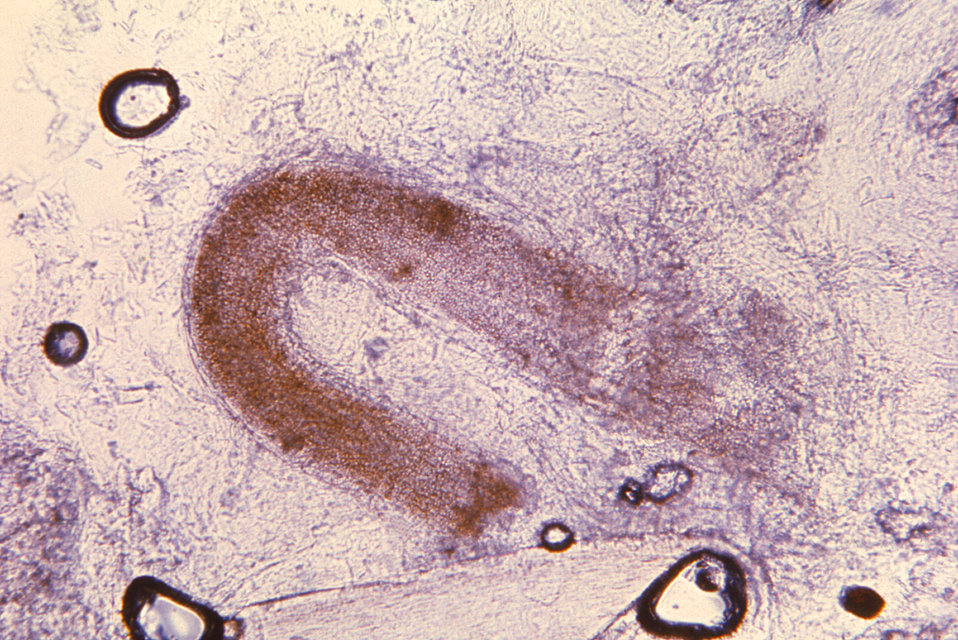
Magnified 100X, and processed in a NaOH mount, this photomicrograph depicts the histopathologic changes in the structure of a hair follicle, in a patient with ringworm, infected with the dermatophyte, Trichophyton tonsurans. The fact that this infection had invaded the internal structure of the hair shaft, makes this infection an endorthrix, rather than an exothrix, which would be confined to the hair's exterior surface. Note that the hair stub is filled with anthrospores, derived from small segments of the organism's hyphae.